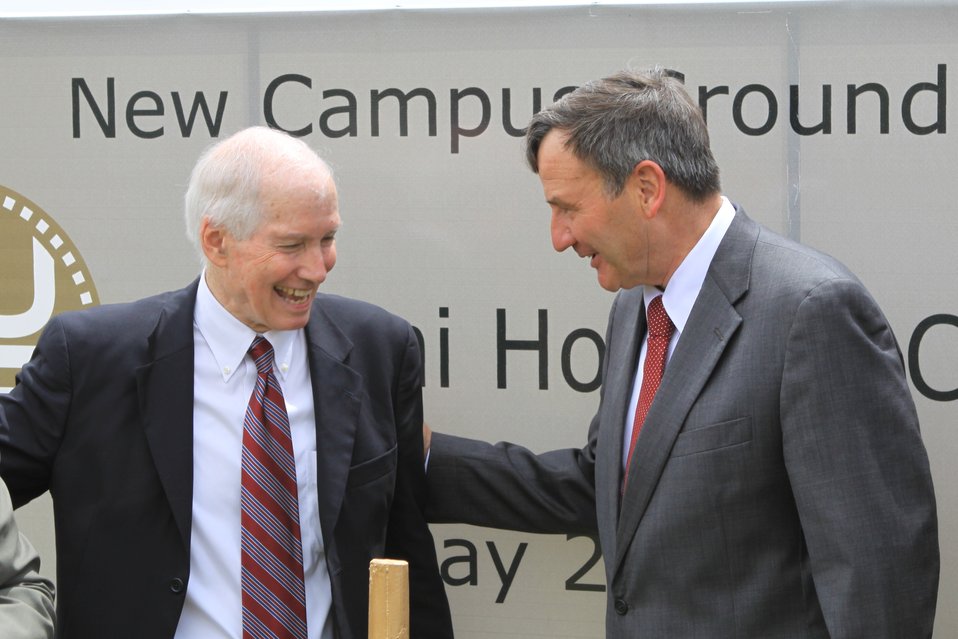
100526 AUAF Graduation 424